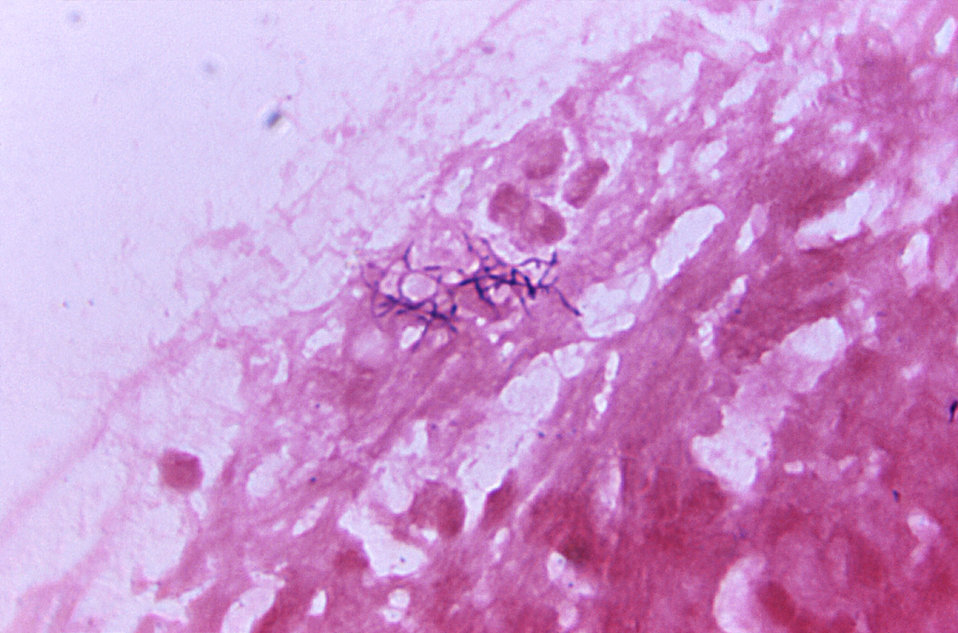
Magnified 1800X, this Gram-stained photomicrograph revealed the presence of rod-shaped, Gram-positive Actinomyces odontolyticus bacteria that were found in a smear from a brain abscess. Note the hyphae, or branched chains of bacteria, giving these a fungal appearance.